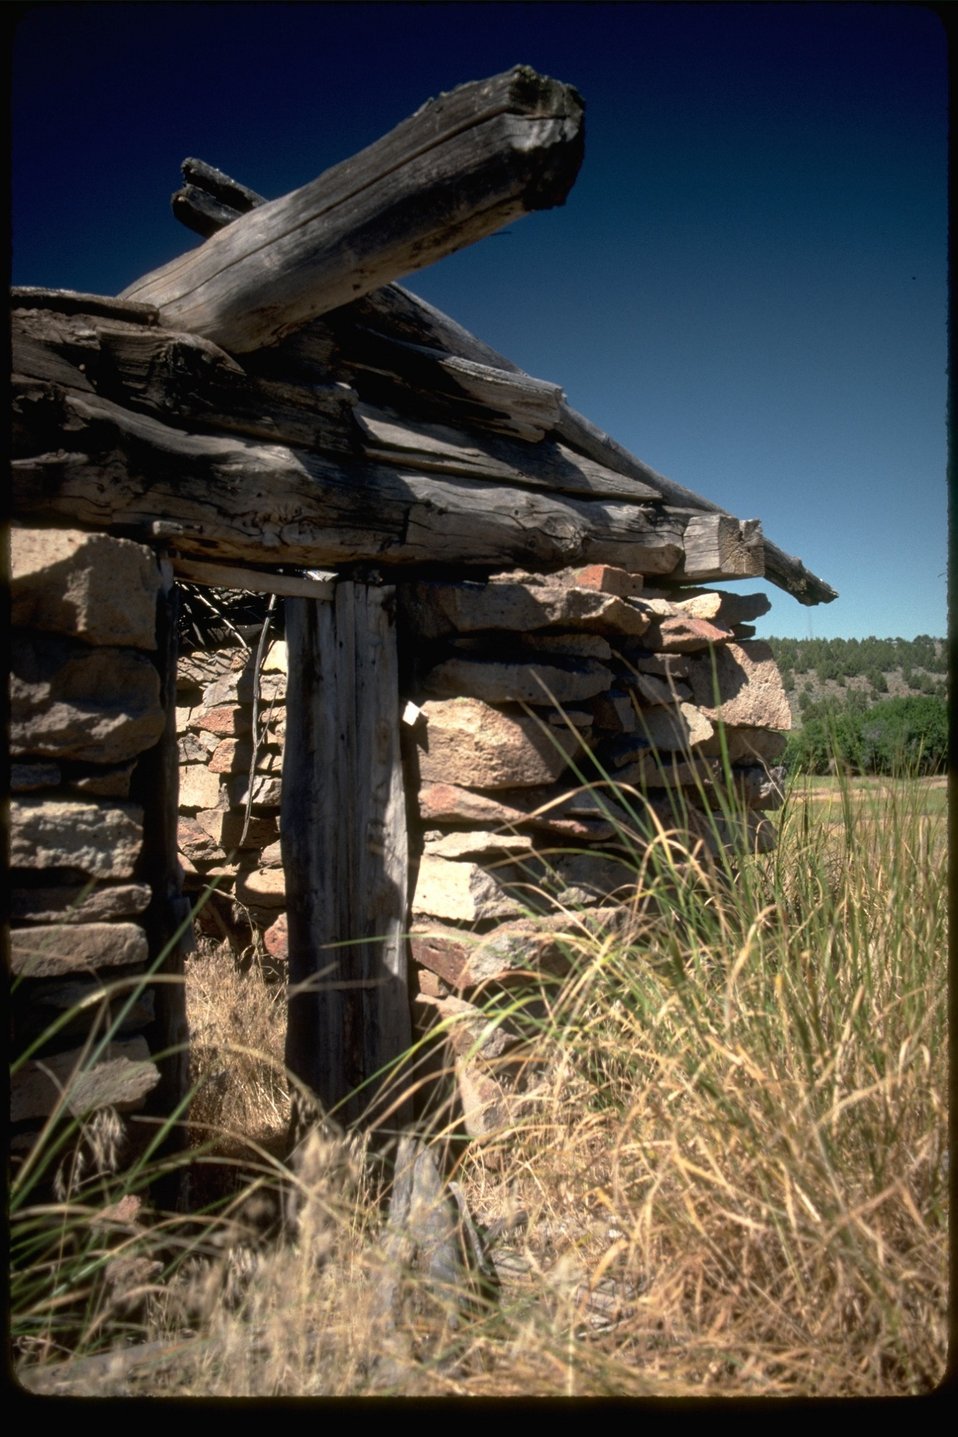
Ben Riddle Homestead remains on the Riddle Brothers Ranch in historic district of the Burns District.